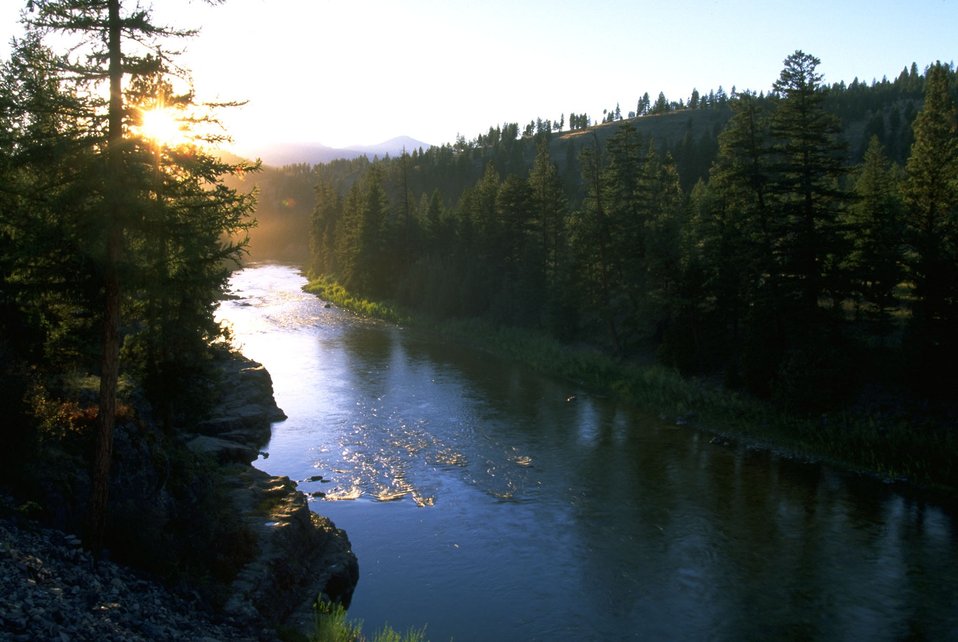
Early morning on the Blackfoot River